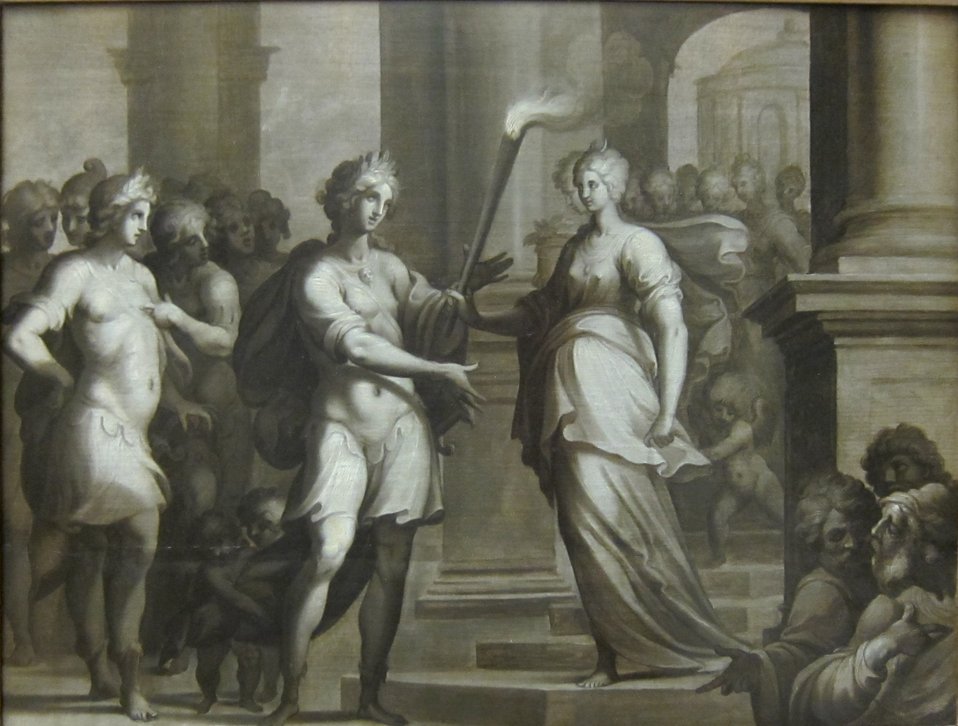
'Théagène reçoit le flambeau des mains de Chariclée' by Ambroise Dubois